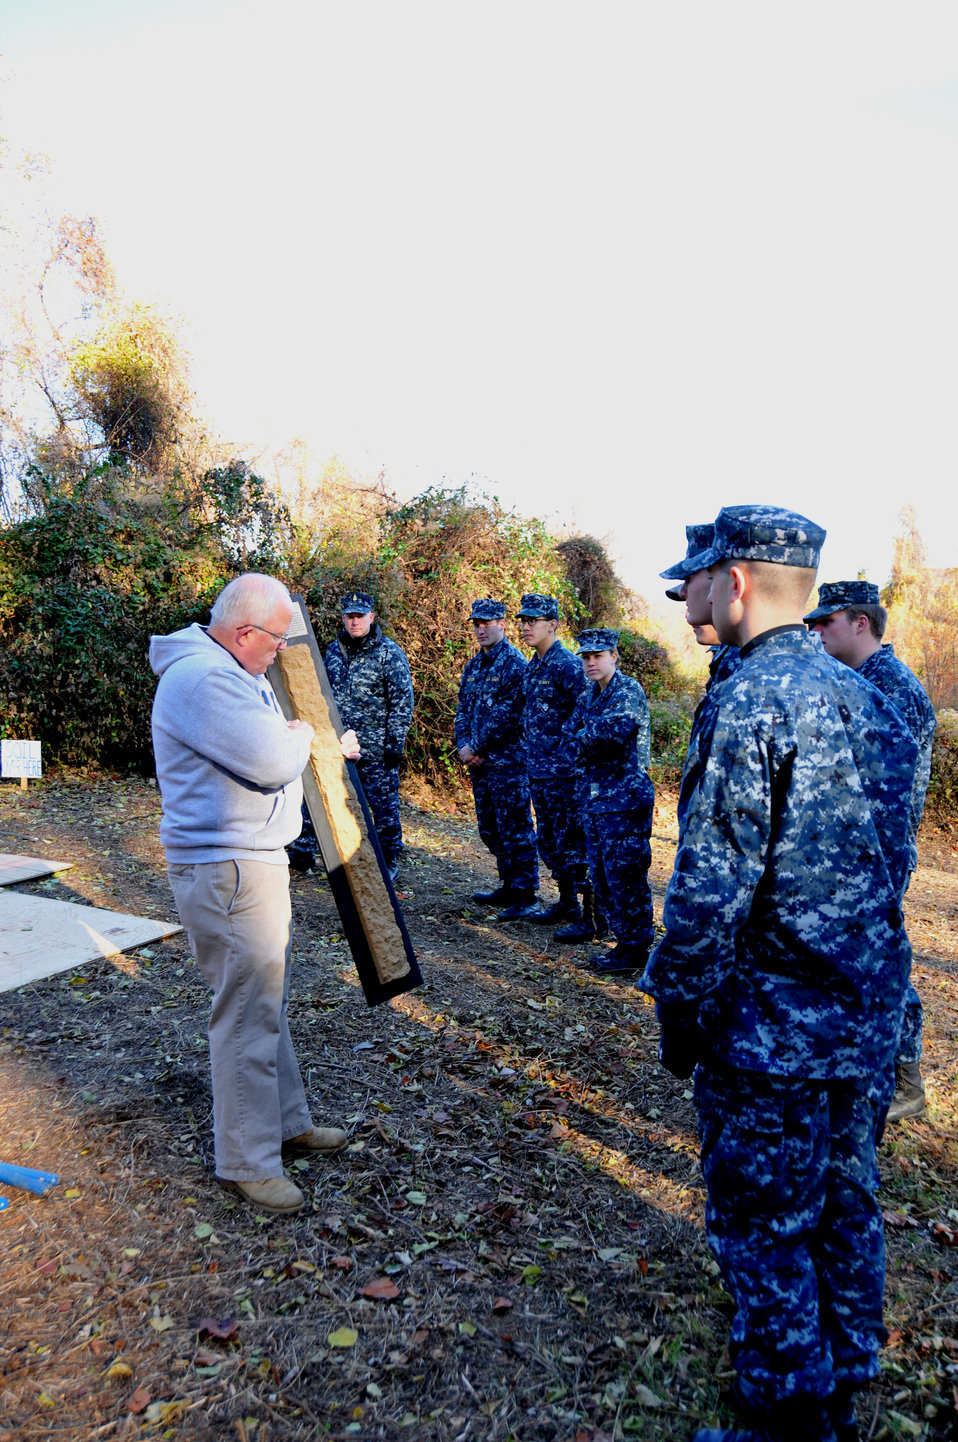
Goshen 1

U.S. Department of Agriculture (USDA) Natural Resource Conservation Service (NRCS) soil scientist Dean Cowherd explains a soil horizon to the midshipmen before they begin to dig.